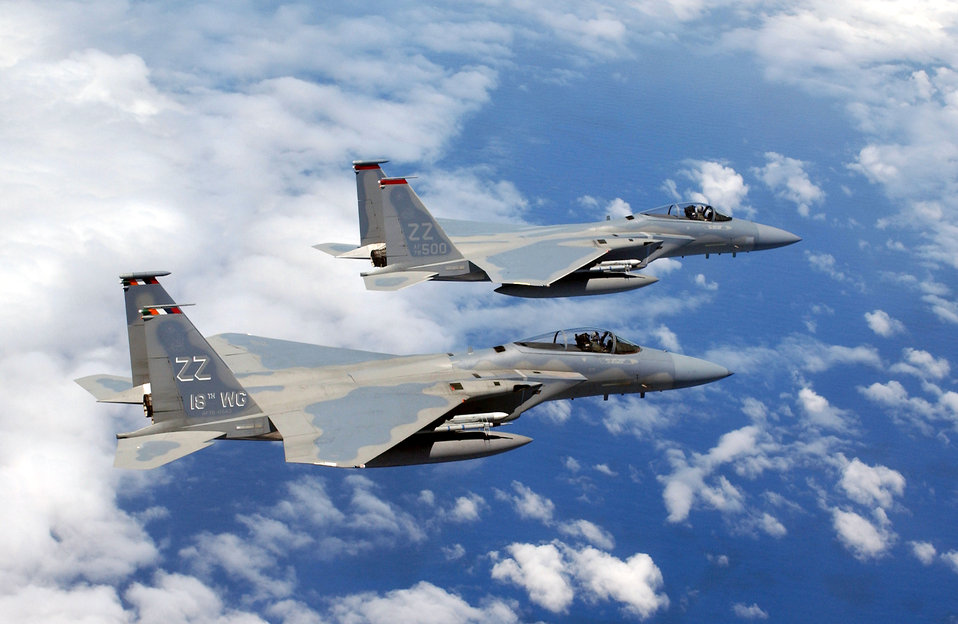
Soaring Eagles

OVER JAPAN -- A formation of F-15 Eagles flies over Okinawa following a joint bilateral training mission here recently. The Japanese-American mission tests the air defense and counter air capabilities of both countries. The aircraft are assigned to the 67th Fighter Squadron at Kadena Air Base.